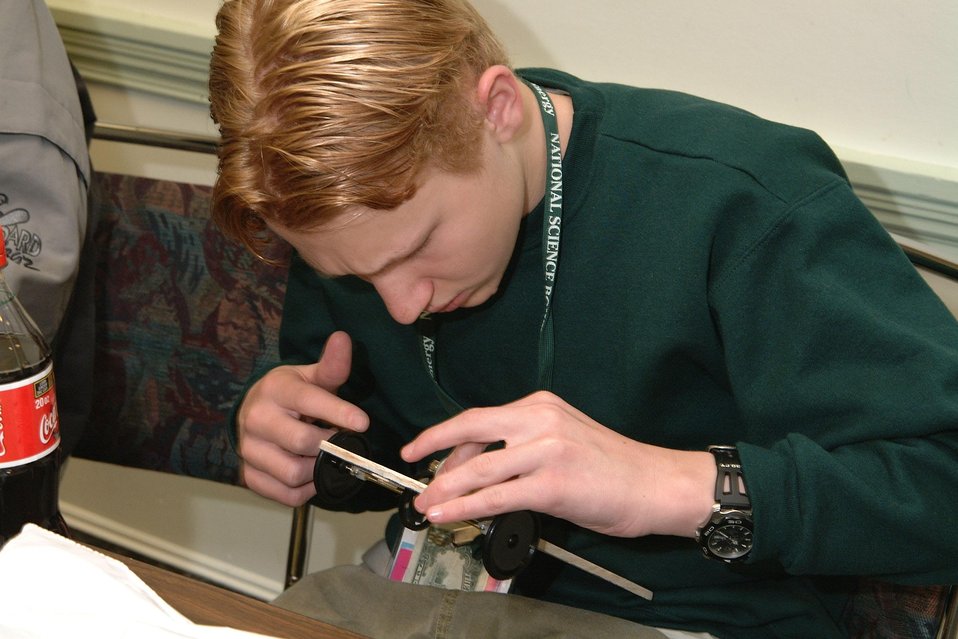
TEAM MEMBER OF ALBUQUERQUE ACADEMY, ALBUQUERQUE, NM WORKING ON A MODEL SOLAR CAR.

THE DEPARTMENT OF ENERGY SPONSORED THE FIRST NATIONAL MIDDLE SCHOOL SCIENCE BOWL ON MARCH 21-24, 2002 IN WASHINGTON, DC AT DOE HEADQUARTERS FORRESTAL BUILDING. ON MARCH 23RD THE COMPETITION INCLUDED A MODEL SOLAR CAR RACE HELD AT THE NATIONAL 4-H CONFERENCE CENTER, CHEVY CHASE, MD. THE MODEL CARS WERE DESIGNED AND CONSTRUCTED BY THE TEAM MEMBERS.